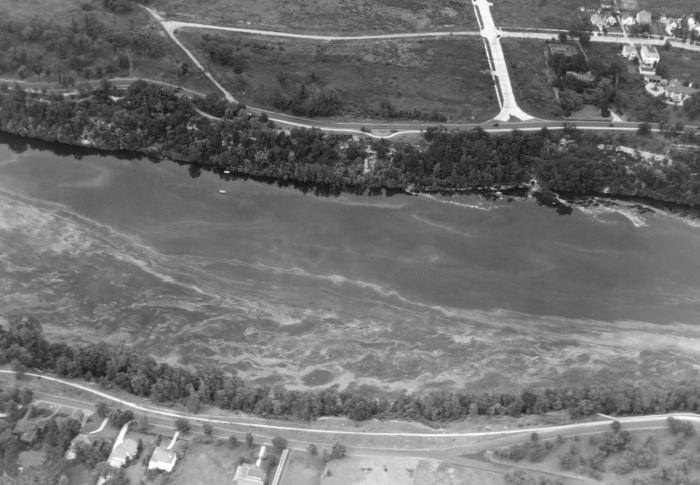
From this historic aerial view taken on June 7, 1933, the Mississippi River was seen as it passed by Somerville Avenue as the river passed through St. Paul, Minnesota. It was taken during a Minnesota Department of Health study of the public bathing and recreation areas along the river.